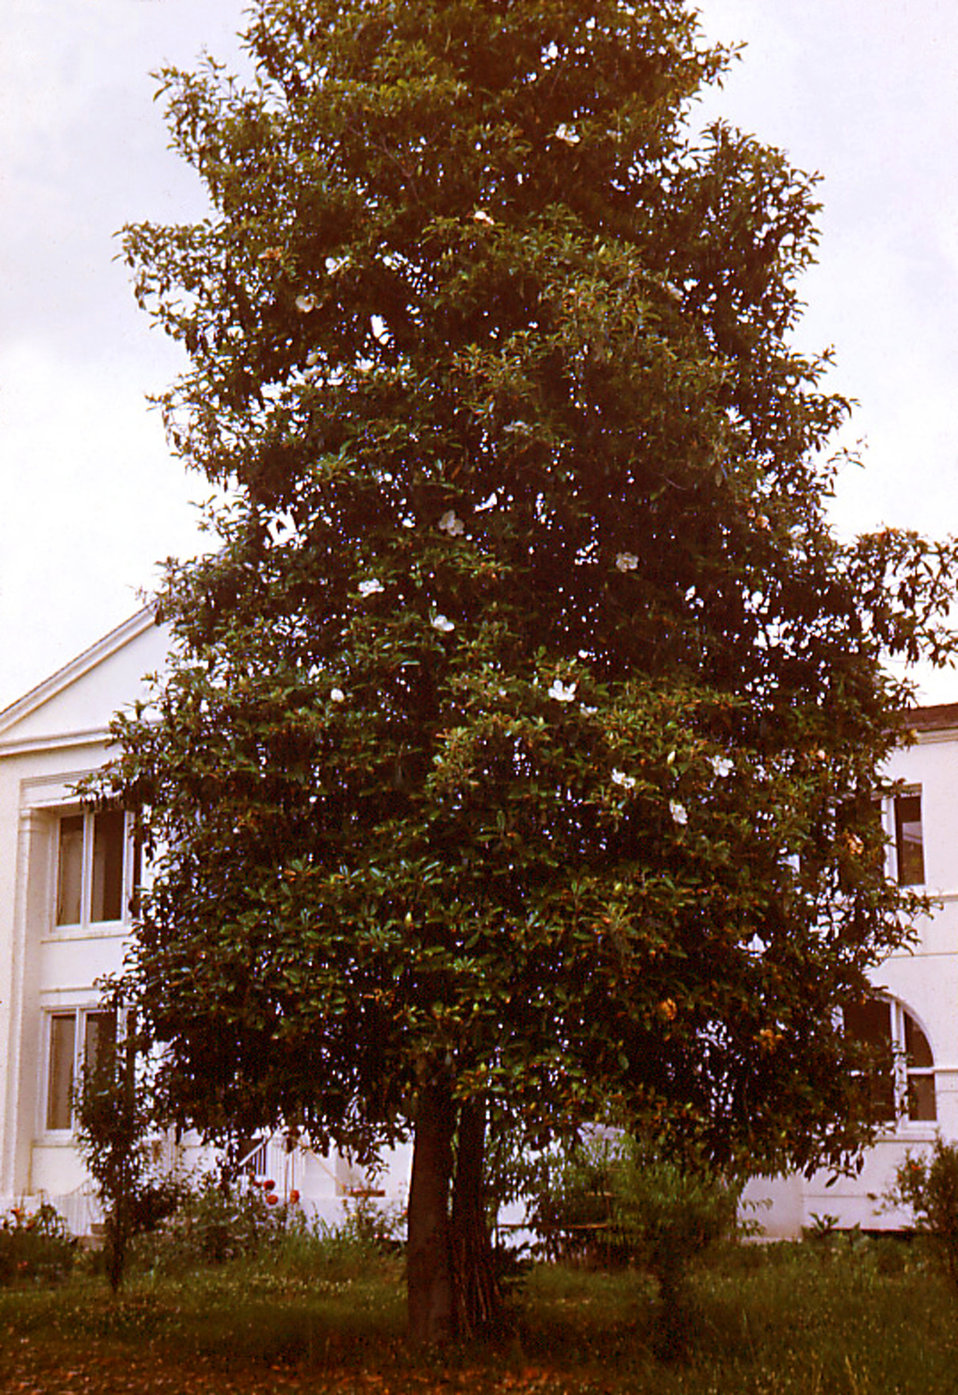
This historic image depicted one of the tall Magnolia trees that had been growing on the grounds of the Carville, Louisiana Leprosarium. The Magnolia is the Louisiana State flower, and there were many, many such trees growing on the hospital's acreage."Patients of the U.S. Marine Hospital in Carville, Louisiana, produced a set of 35 mm slides around 1950 from which this image was derived. In 2002, a patient's son donated the set, the only one known in existence, to the museum. The father, a patient at Carville for several years, brought these slides home around 1950 to give his family a snapshot of life at the national leprosarium. The act of quarantining patients for leprosy (HD) remained law in the state of Louisiana until 1957."